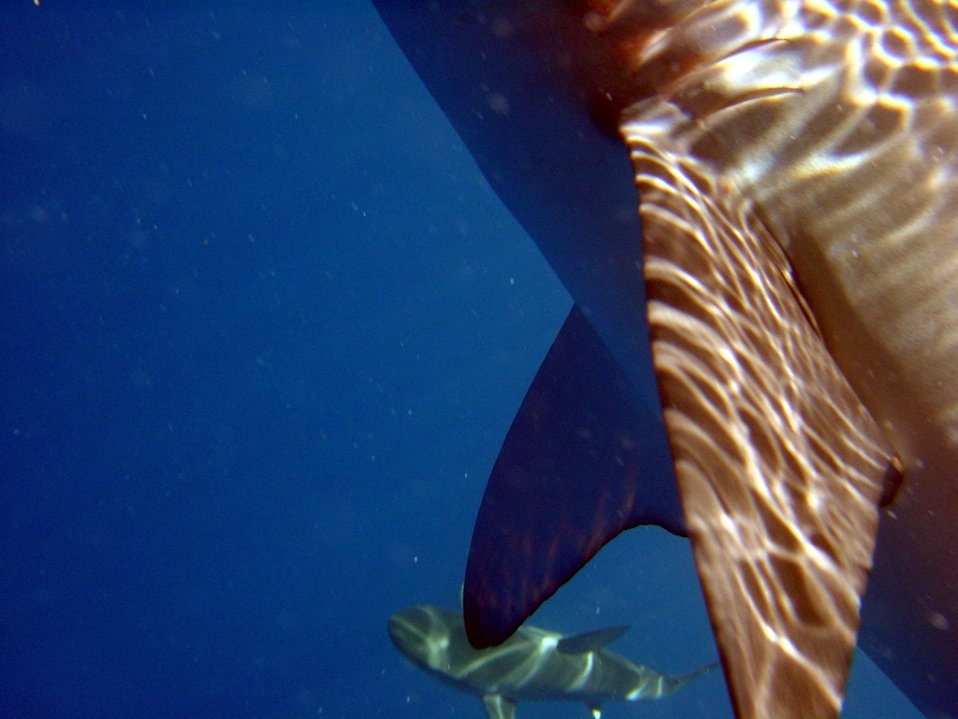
A large shark too close to capture in the cameras field of view.